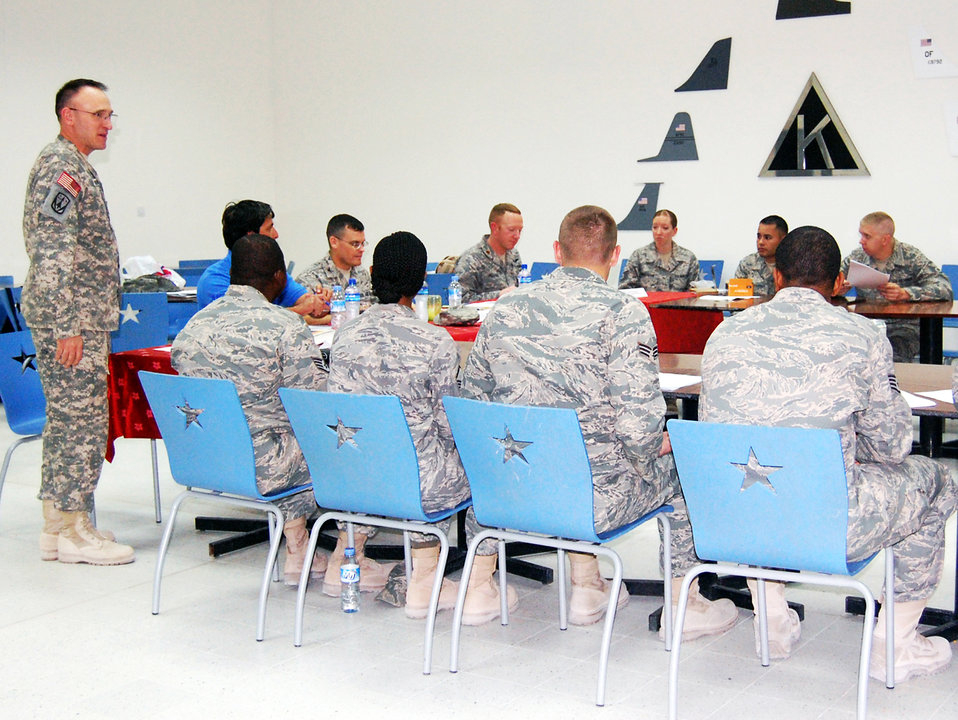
Servicemembers teaching others while deployed

Army Maj. Jason Vranes talks to students in his marketing class Dec. 5. Students gave marketing presentations to a board comprised of Major Vranes, Col. John Lohr, 379th Expeditionary Mission Support Group commander, David Vela, 379th Force Support Squadron marketing director, and Maj. Rob Peacock, 71st Expeditionary Air Control Squadron. Major Vranes is a 2-43 Air Defense Artillery Battalion executive officer.